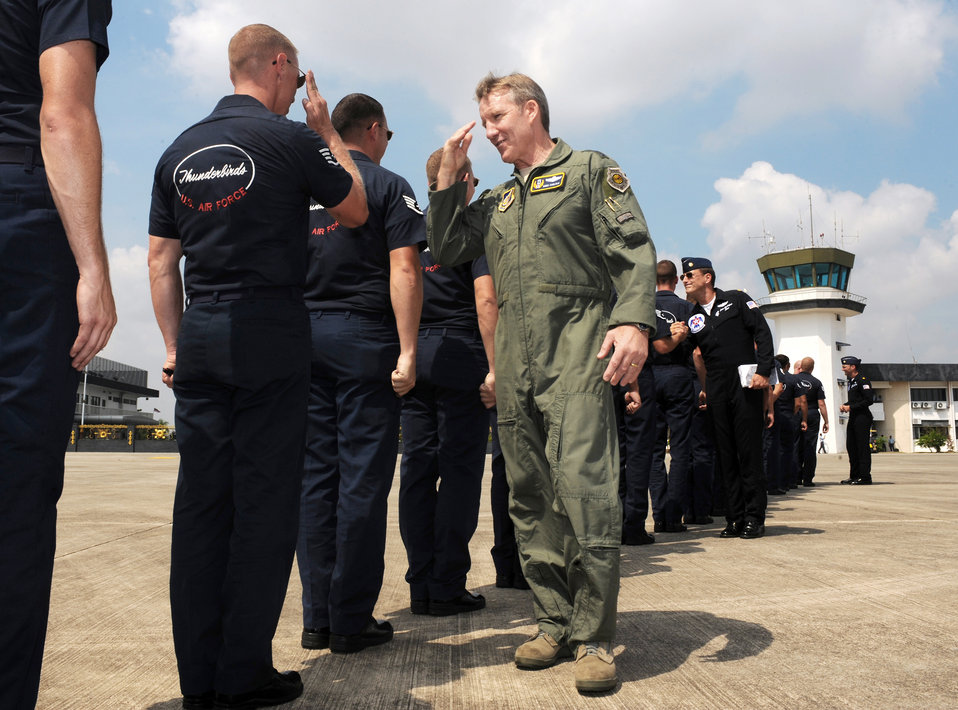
Thunderbirds perform for Malaysian audience

Lt. Gen. Herbert J.